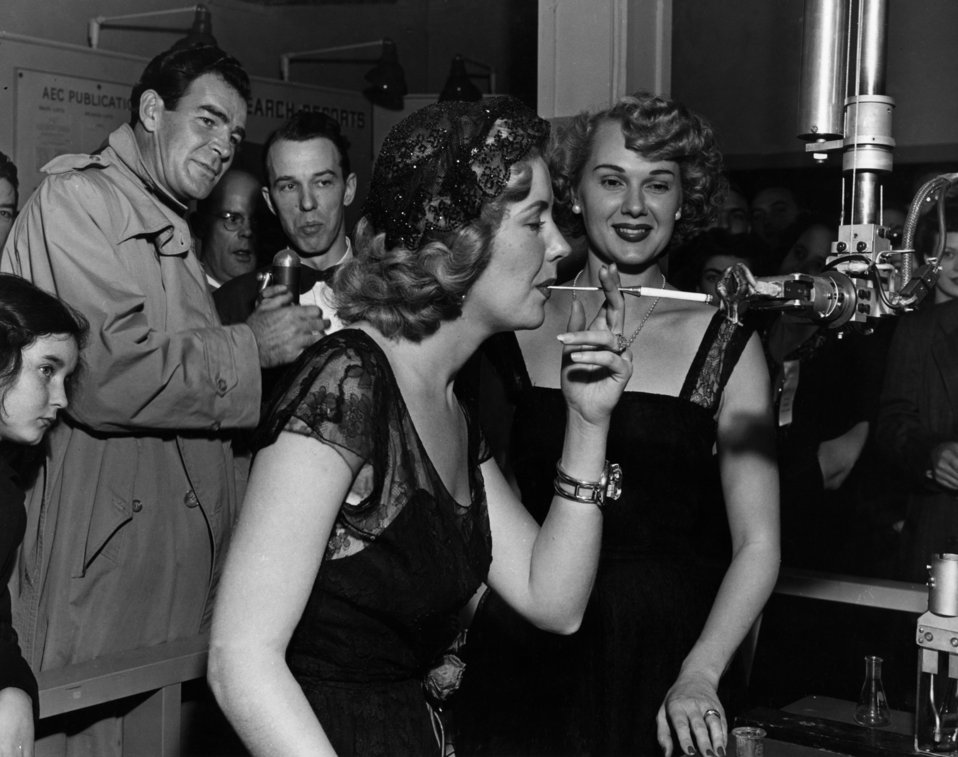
Movie Stars Rod Cameron, Marie McDonald and Adele Jergens With Mechcanical Hand at AMSE

5424-23 DOE photo Ed Westcott 3-19-1949 During Opening of the City of Oak Ridge to the Public Oak Ridge Tennessee